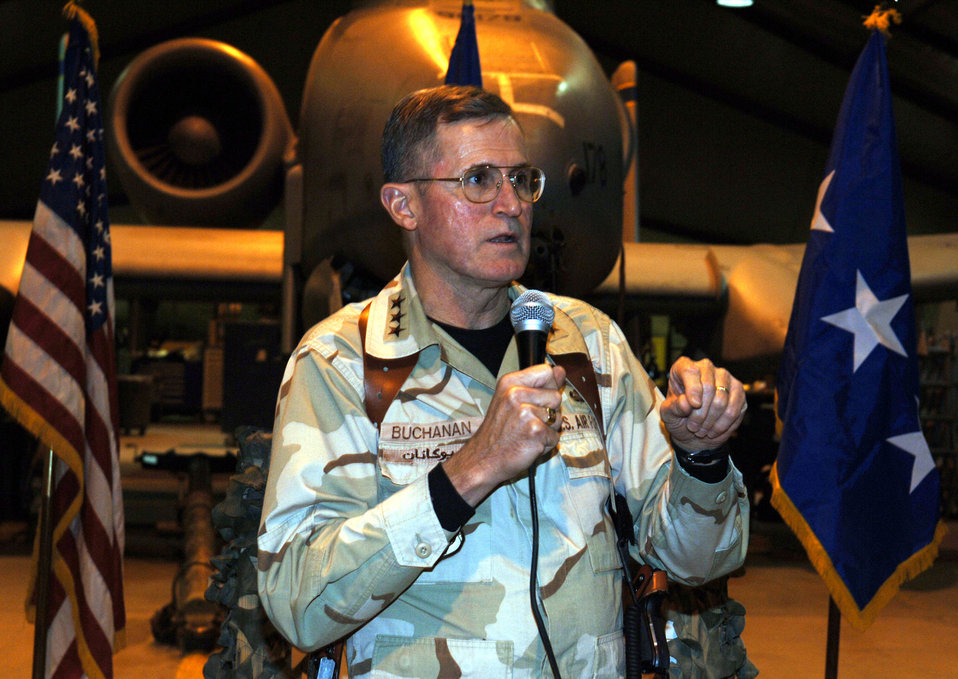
CENTAF commander visits troops

BAGRAM AIR BASE, Afghanistan (AFPN) -- Lt. Gen. Walter E. Buchanan III, U.S. Central Command Air Forces commander, addresses Airmen and Sailors in a hangar here as part of his last trip to Afghanistan as commander. General Buchanan is scheduled to retire this spring.